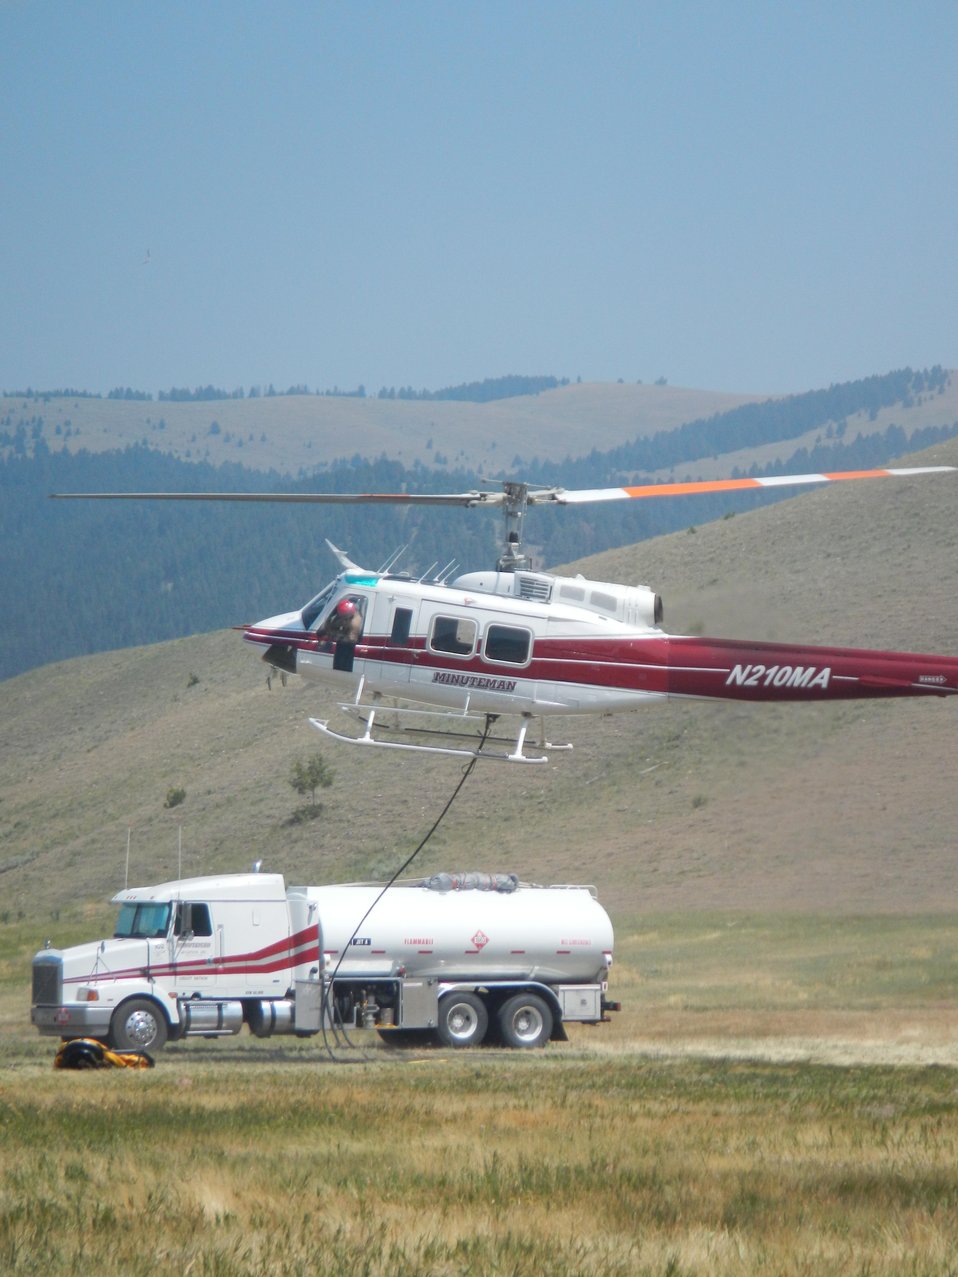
A helicopter refuels at helibase to continue fight on the Moose Meadow Fire. The Moose Meadow Fire in the Beaverhead-Deerlodge National Forest near Philipsbug, MT began on Jul. 25, 2013 by lightning has consumed approximately 3,400 acres and is approximately 30% contained.